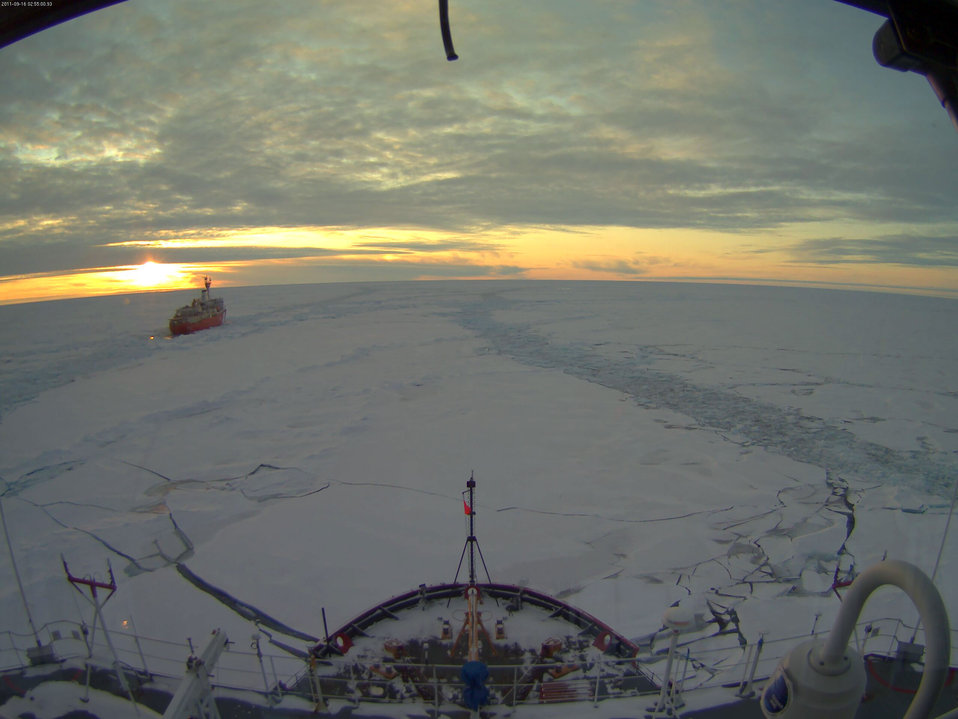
U.S.-Canada Fourth Joint Mission To Map the Continental Shelf in the Arctic Ocean

Views of the U.S.-Canada fourth joint mission to map the continental shelf in the Arctic Ocean in August and September 2011. The 2011 joint mission employed the flagship icebreaker from each country, the U.S. Coast Guard Cutter Healy and the Canadian Coast Guard Ship Louis S. St-Laurent (LSSL), with each ship performing different functions and one ship breaking ice for the other.